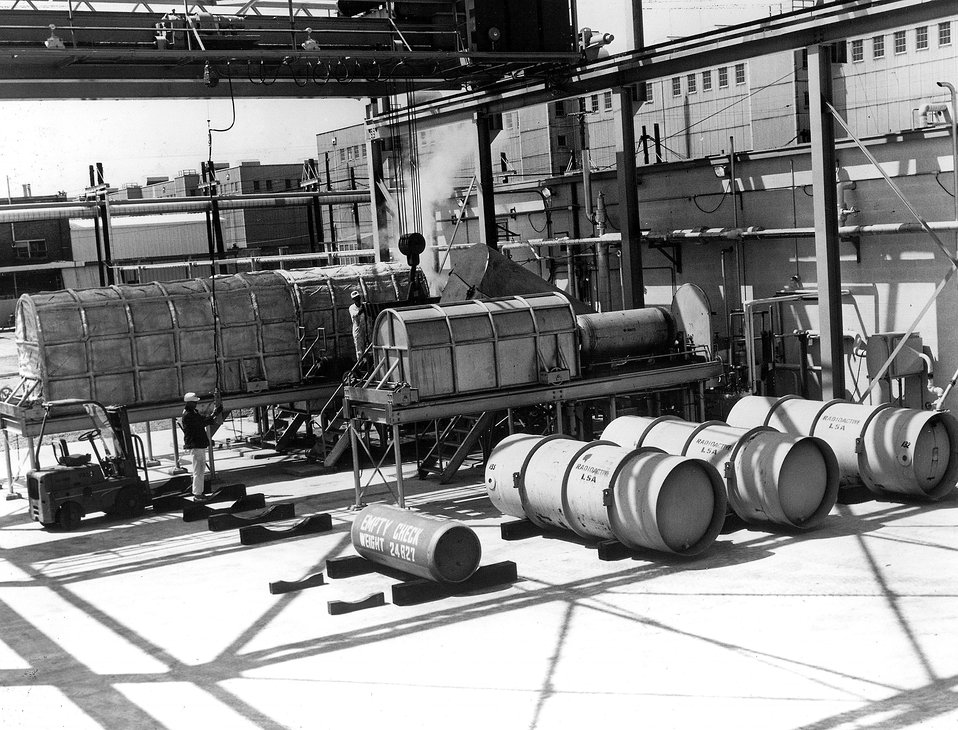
This is the weighing and assaying facility at Oak Ridge. Circa 1972.